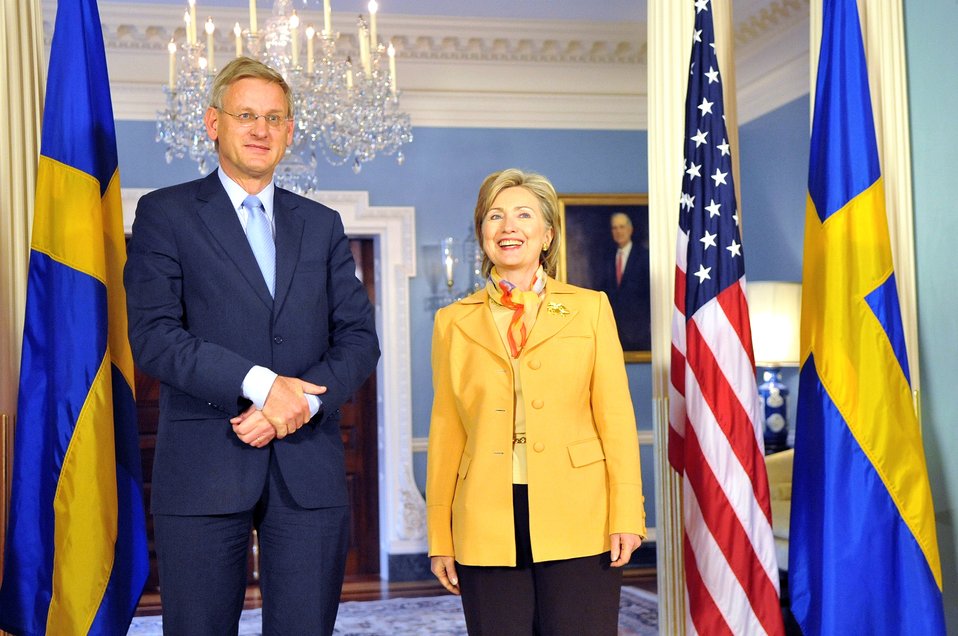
Secretary Clinton Meets With Swedish Foreign Minister

U.S. Secretary of State Hillary Rodham Clinton hosts a bilateral meeting with Swedish Foreign Minister Carl Bildt at the U.S. Department of State in Washington, DC May 5, 2009.